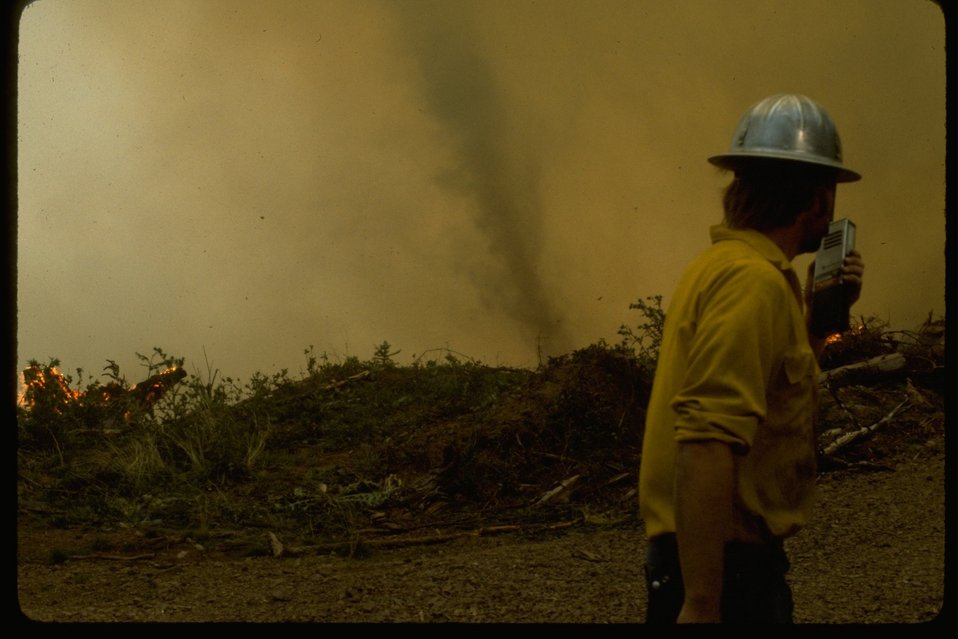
Firefighter in the field on his radio.